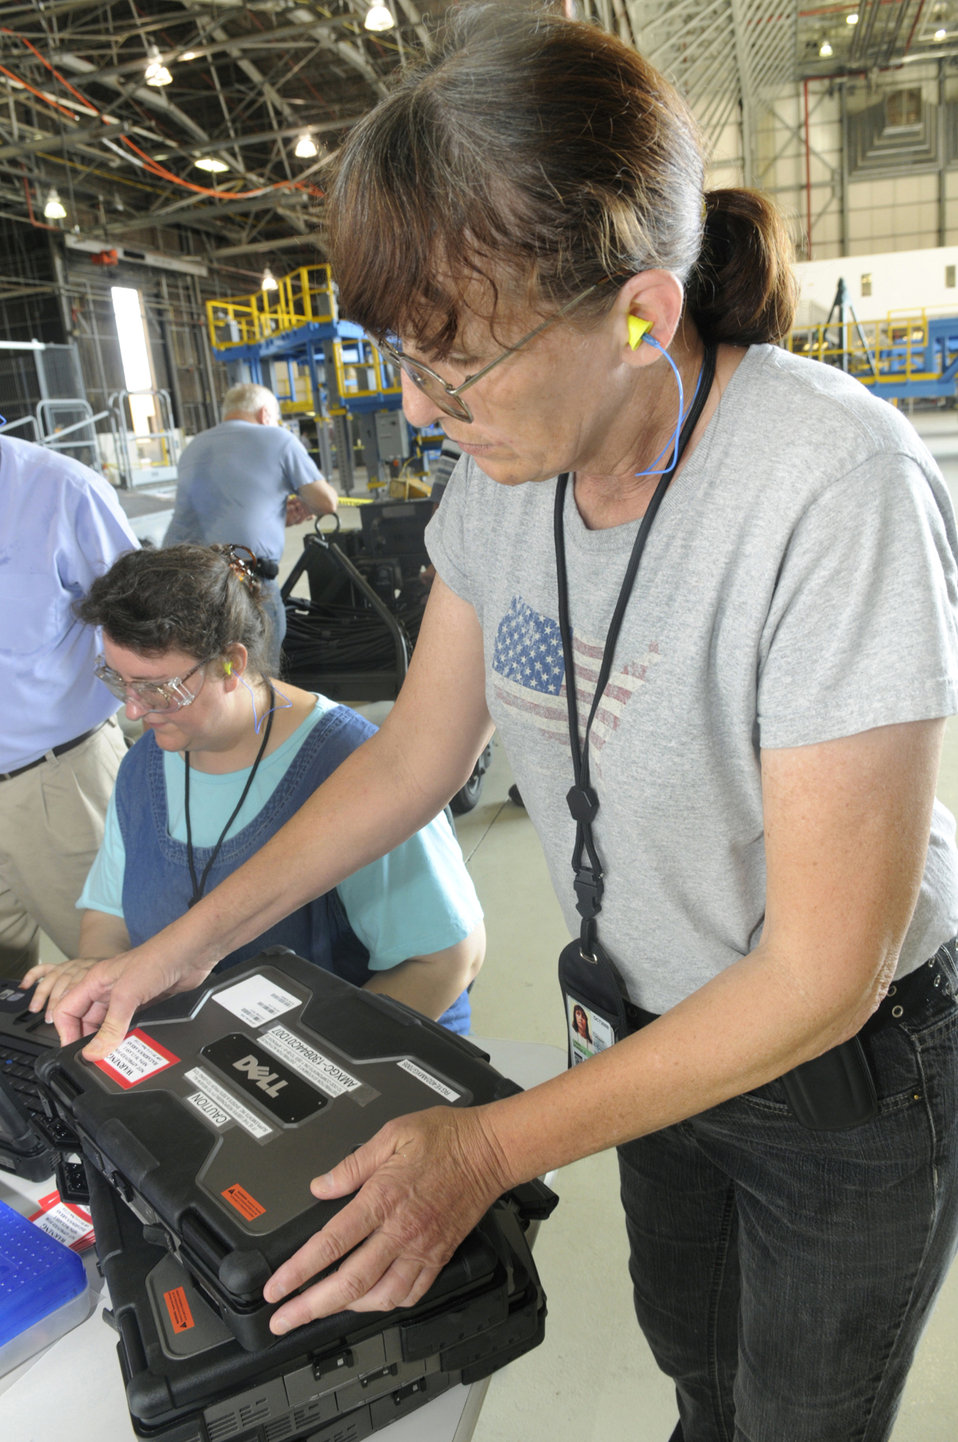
E-tools give Robins personnel access to digital data

Lisa Waterman (left) and Donna Long label the laptops for identification, load technical data into the machines and monitor them so mechanics get current data Aug 4 at Robins Air Force Base, Ga. Ms. Waterman is a TODO librarian assistant and Ms. Long is a TODO librarian.